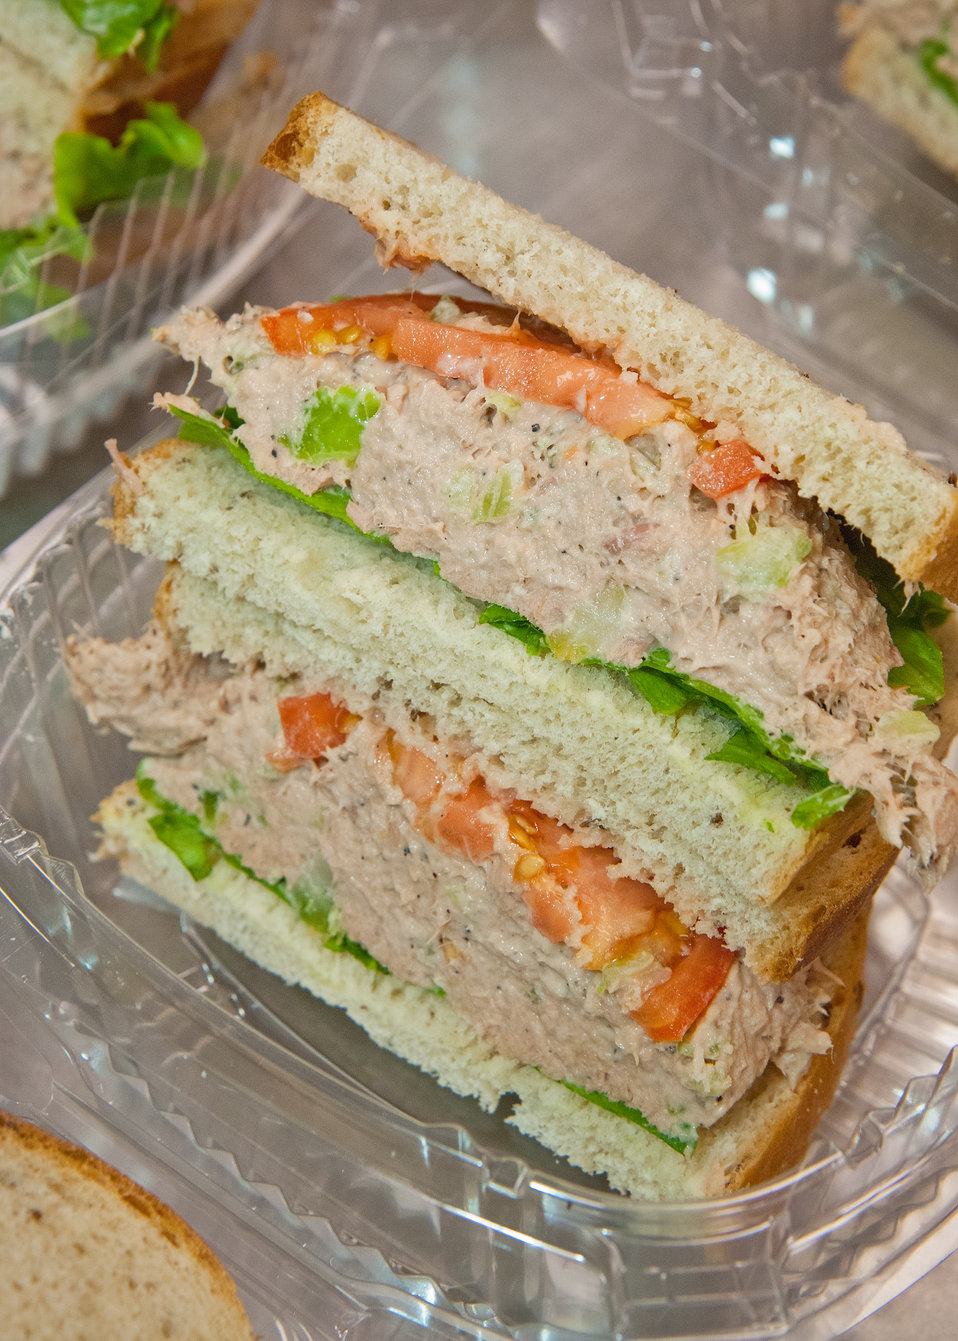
Tuna fish sandwiches for the National School Lunch Program at Washington-Lee High School in Arlington, Virginia, on Wednesday, October 19, 2011. The National School Lunch Program is a federally assisted meal program administered by the United States Department of Agriculture, Food and Nutrition Service operating in public, nonprofit private schools and residential child care institutions. It provides nutritionally balanced, low-cost or free lunches to children each school day.